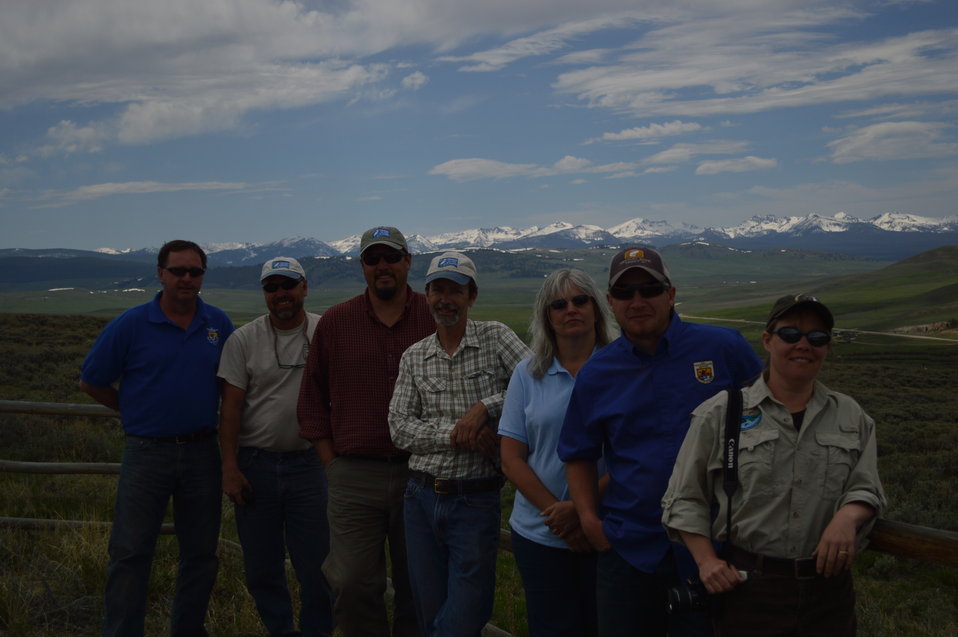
Regional Leadership Visit to Montana 2014